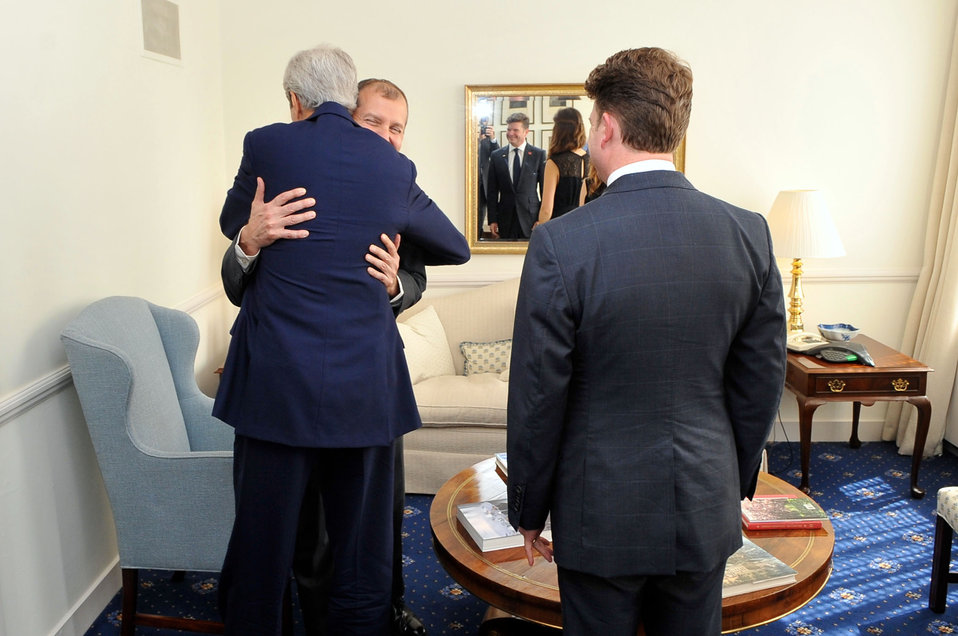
Secretary Kerry Embraces Wounded Foreign Service Officer Lodinsky Upon Reunion in London

U.S. Secretary of State John Kerry, accompanied by U.S. Ambassador to the United Kingdom Matthew Barzun, is reunited with Foreign Service Officer Jeff Lodinsky, who was wounded in Afghanistan and first met by the Secretary two days after he was sworn in, before the Secretary addressed employees at Embassy London on June 13, 2014.